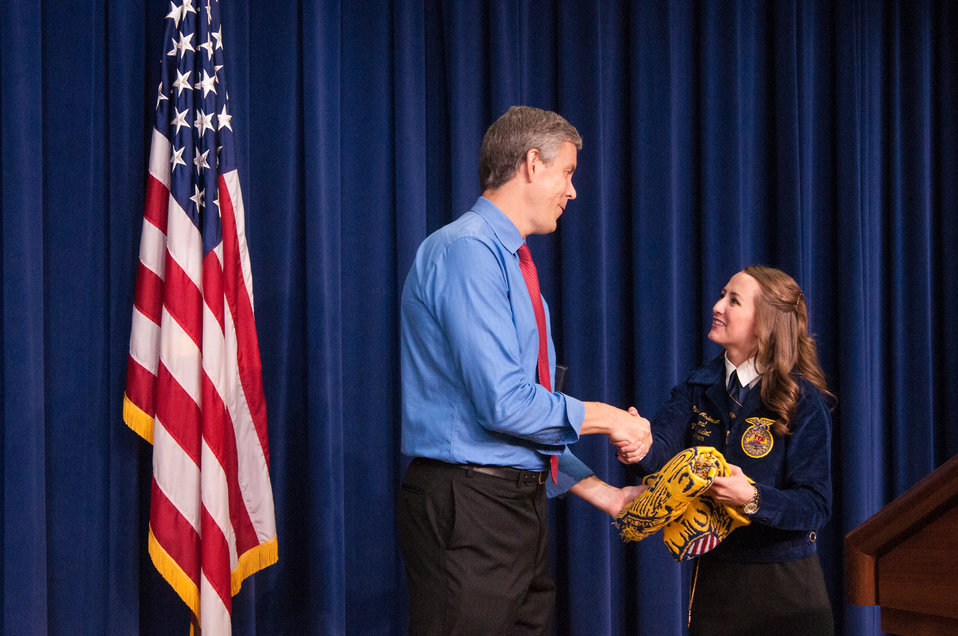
Education Secretary Arne Duncan receives a token gift of appreciation from FFA National Secretary Kalie Hall (GA) at a meeting of the White House Rural Council to an audience of the National State President’s Conference of the FFA on Wednesday, Jul, 24, 2013 in Washington, D.C. Secretary Duncan topics related to education and the importance of an education.